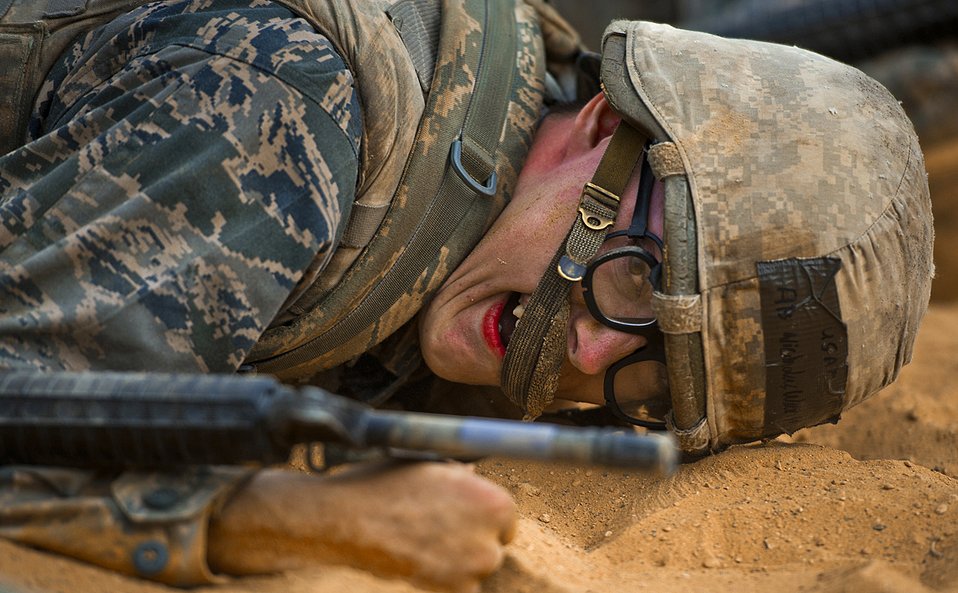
Sandy Crawl

Trainee Nicholas Warila low crawls through an obstacle course July 27, 2011, at Medina Annex, Texas, during the Creating Leaders, Airman and Warriors course. The CLAW is designed to test teamwork, leadership skills and the ability to perform under pressure while combined with basic military training trainees from other flights. Warila is a BMT trainee assigned to the 322nd Training Squadron at Lackland Air Force Base, Texas.